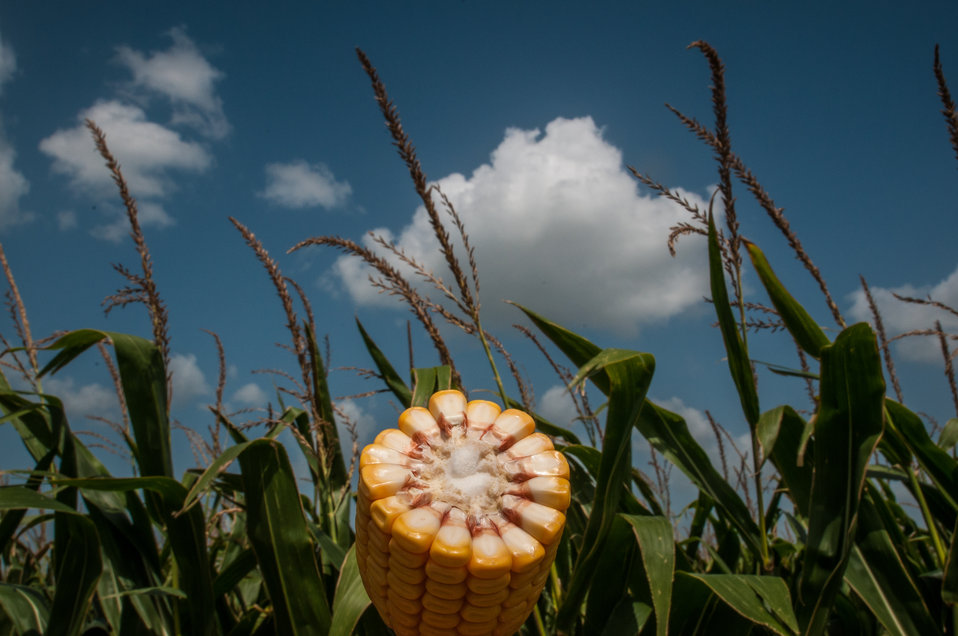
This is a crosscut section of #2 yellow corn at T and S Marek Farms in Wharton County, TX, on Jun. 20, 2013. The 3,000 acre farm produces corn and milo (grain sorghum) for feed, upland cotton and cattle.